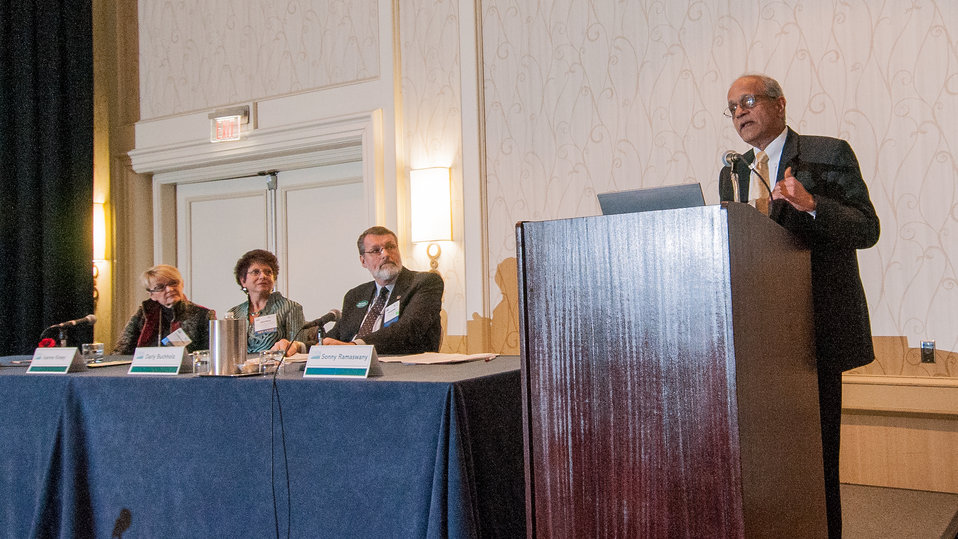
U.S. Department of Agriculture (USDA) National Institute of Food and Agriculture (NIFA), Sonny Ramaswamy, right to left, moderates the Promoting Nutritious Diets session with National Extension Committee on Organization and Policy Chair Daryl Bucholtz, Rutgers New Jersey Agricultural Experiment Station Cooperative Extension of Ocean County Family & Community Health Sciences Educator Joanne Kinsey, and Baylor College of Medicine's Dr. Debbie Thompson, during the 2013 Agricultural Outlook Forum, held at the Crystal Gateway Marriott Hotel, Arlington, Virginia on Thursday, Feb. 21, 2013. This annual Forum brings together producers, policymakers, and business, government, and industry leaders to meet, exchange ideas, and discuss timely agriculture issues.